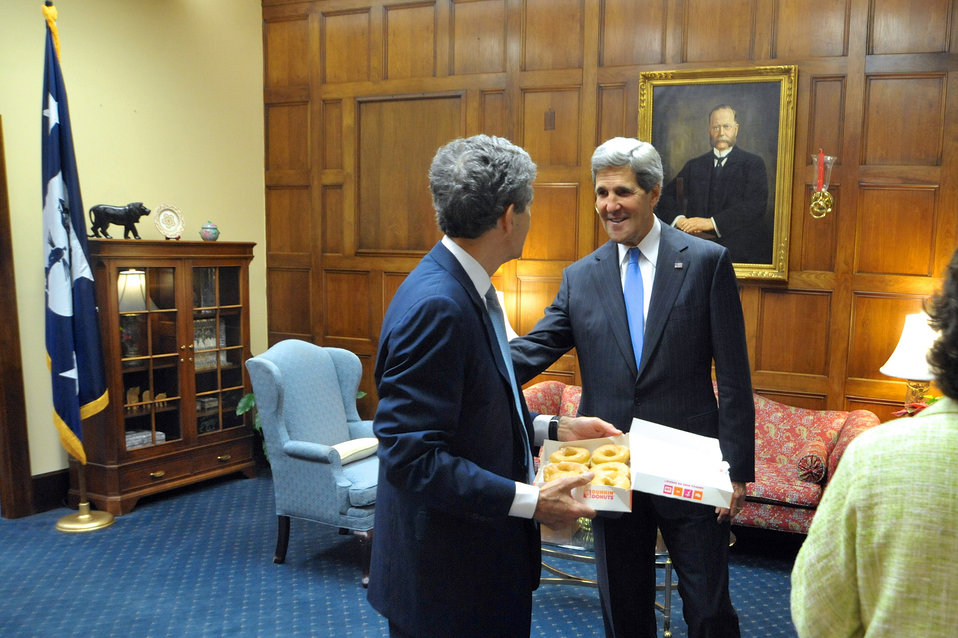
Secretary John Kerry Delivers Dunkin' Donuts to His Brother, Acting Commerce Secretary Cameron Kerry, and His Staff

Acting U.S. Secretary of Commerce Cameron Kerry opens a box of Dunkin' Donuts glazed doughnuts his brother brought to him and his staff on June 21, 2013, as the siblings and Massachusetts residents shared a fleeting moment of their time together in the Cabinet of the Obama administration. Cameron Kerry, the General Counsel of the Commerce Department, was holding the job until Secretary-Designate Penny Pritzker was confirmed by the U.S. Senate.